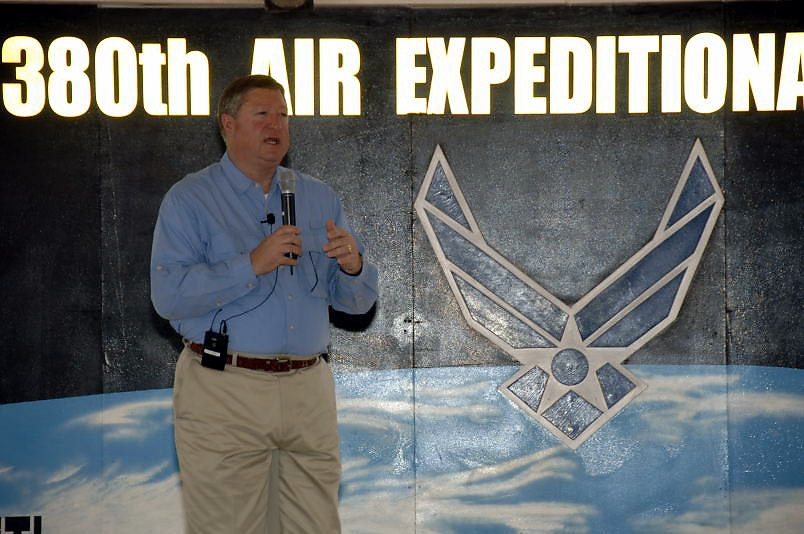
SECAF gains insight into diverse missions at deployed wing

Secretary of the Air Force Michael B. Donley speaks to Airmen from the 380th Air Expeditionary Wing at an air base in Southwest Asia Oct. 12. The secretary visited the 380th Air Expeditionary Wing to gain a better understanding of the infrastructure and capabilities of one the smallest but most diverse bases in the Air Forces Central area of responsibility.